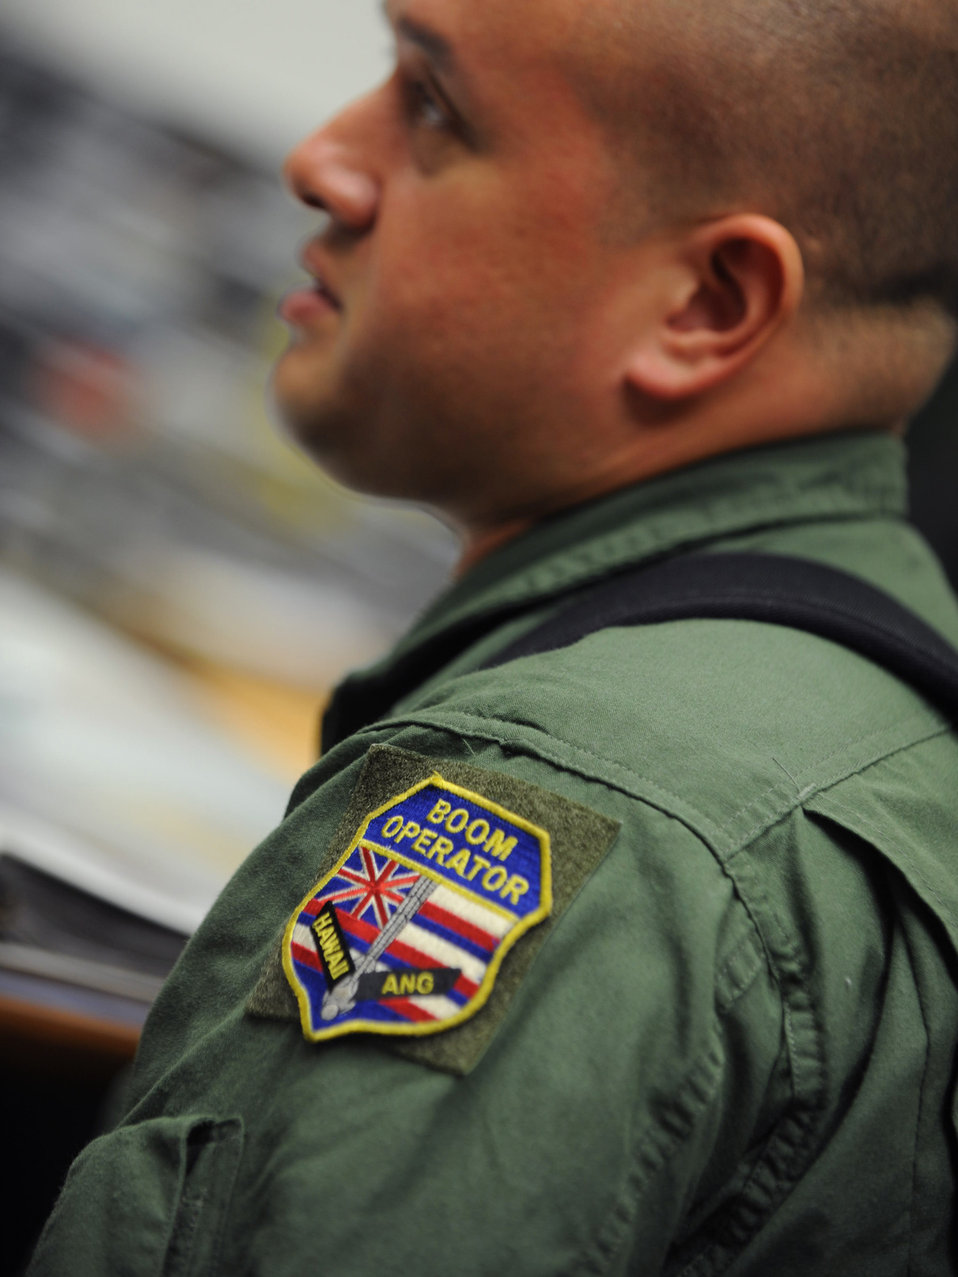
Tanker Toads

Tech. Sgt. Derek Wheeler, a boom operator with the Hawaii Air National Guard, prepares for the second sortie of the 96th Air Refueling Squadron's first operational refueling mission, Dec. 15, 2010, at Joint Base Pearl Harbor-Hickam, Hawaii. During the mission, a 96th ARS KC-135 Stratotanker joined a KC-135 from the Iowa Air National Guard as part of a two-ship formation to refuel two B-52 Stratofortresses on their way to Guam.